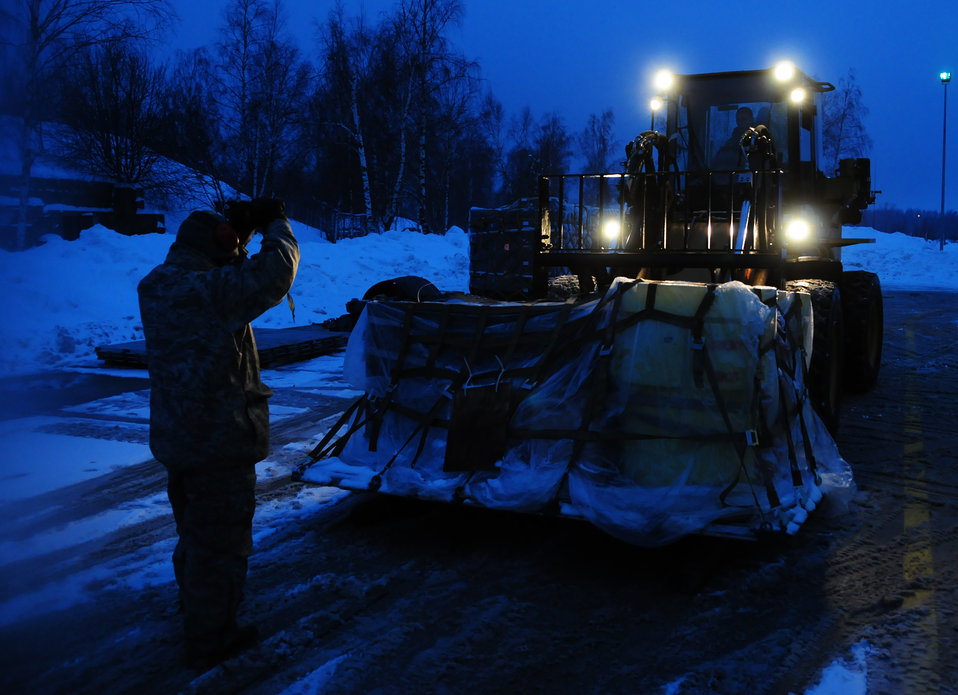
RAT helps 493rd EFS

Tech. Sgt. Carlos Cardenas guides a forklift being driven by Senior Airman Scott Knight Jan. 7, 2011, at Lithuania Air Base, Lithuania. Sergeant Cardenas is an air transportation craftsman with the 493rd Expeditionary Fighter Squadron Redeployment Action Team. Airman Knight is an air transportation journeyman with the 493rd EFS RAT.